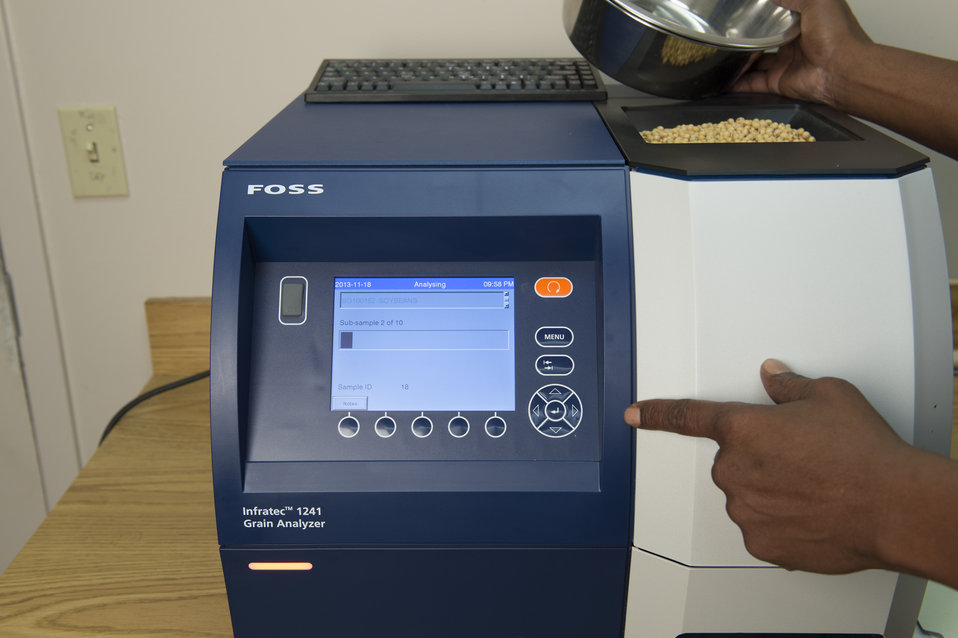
U.S. Department of Agriculture (USDA) Grain Inspection, Packers and Stockyards Administration (GIPSA) Federal Grain Inspection Service (FGIS) employee tests soybean samples at the FGIS inspection laboratory in New Orleans, LA on Monday, Nov. 18, 2013.